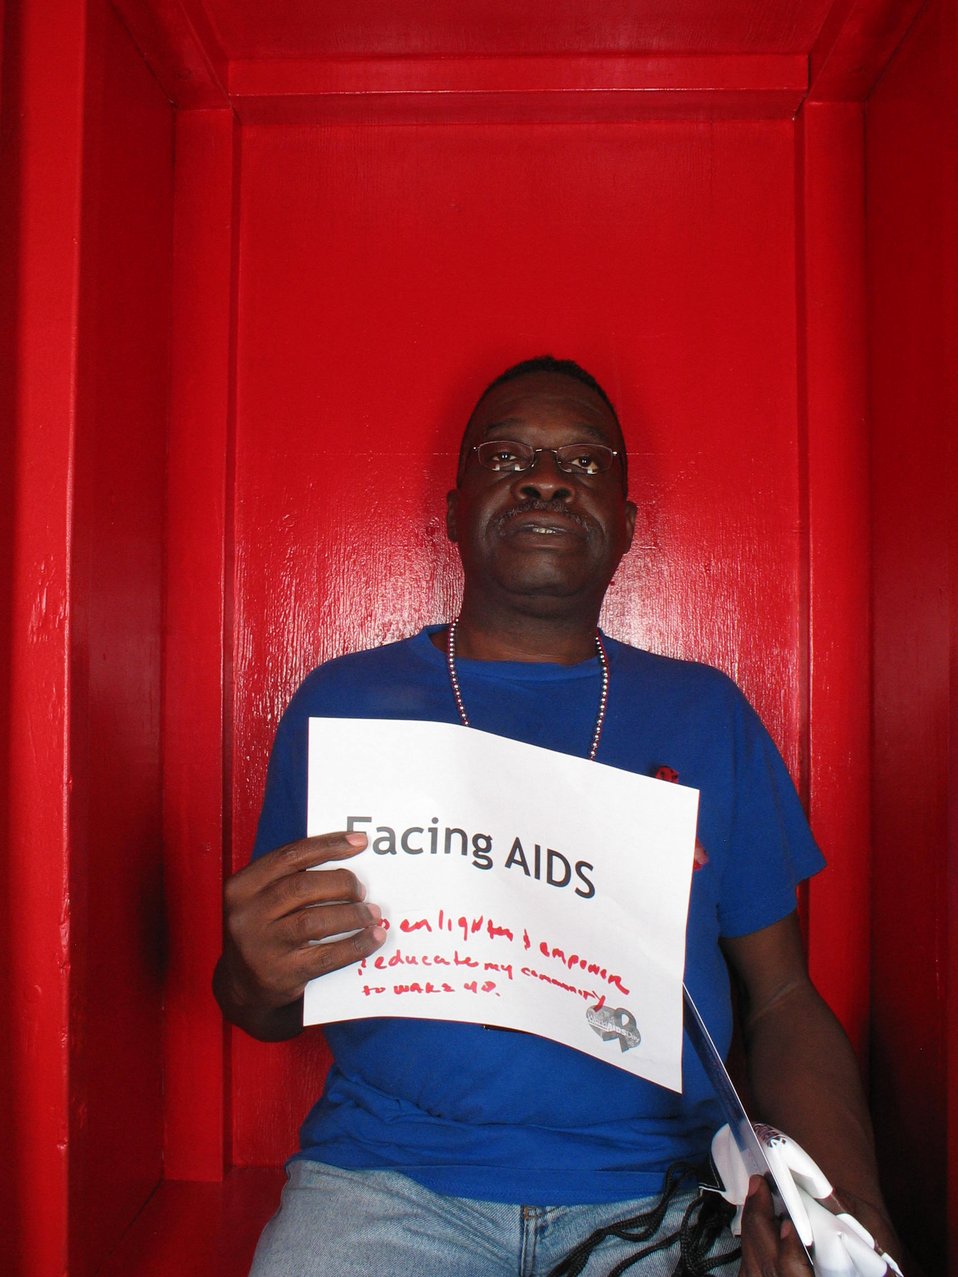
Facing AIDS